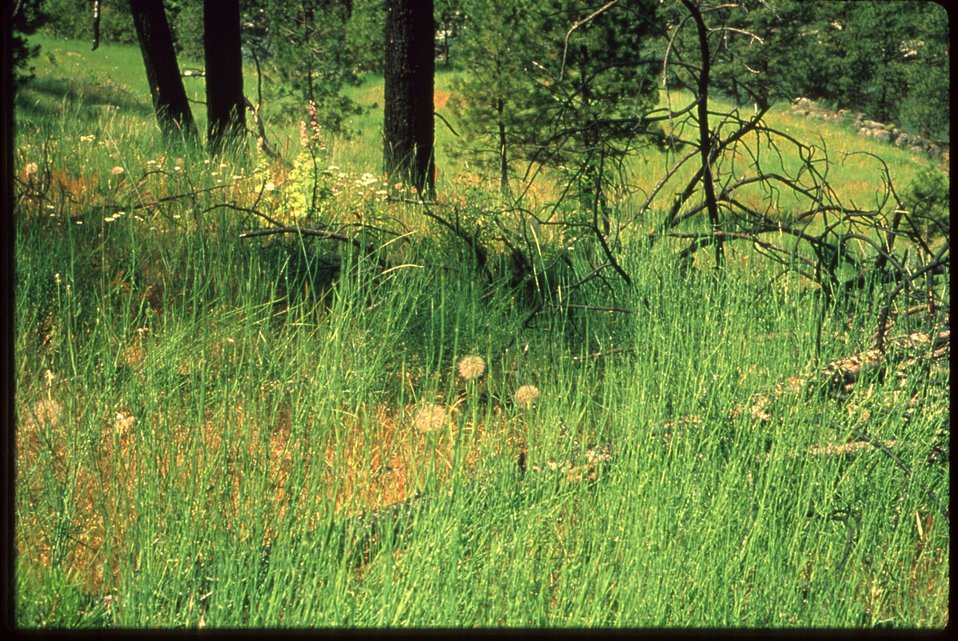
Healthy Grasslands Idaho vegetation Plants in BLM